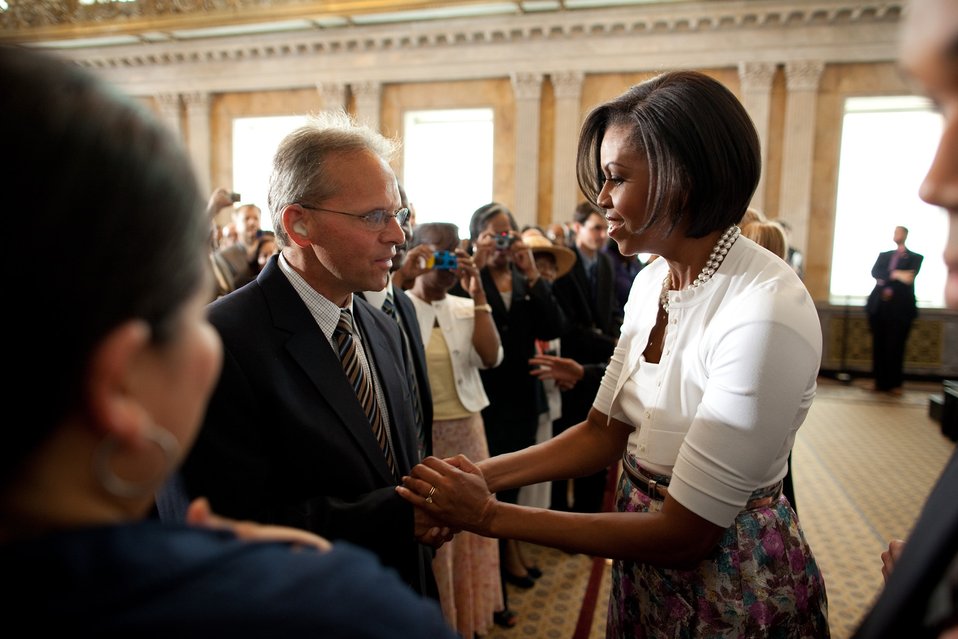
Michelle Obama visits the Treasury Department, 7/7/10

First Lady Michelle Obama greets people during her visit to the Department of Treasury in Washington, D.C., to thank employees for their public service, July 7, 2010.